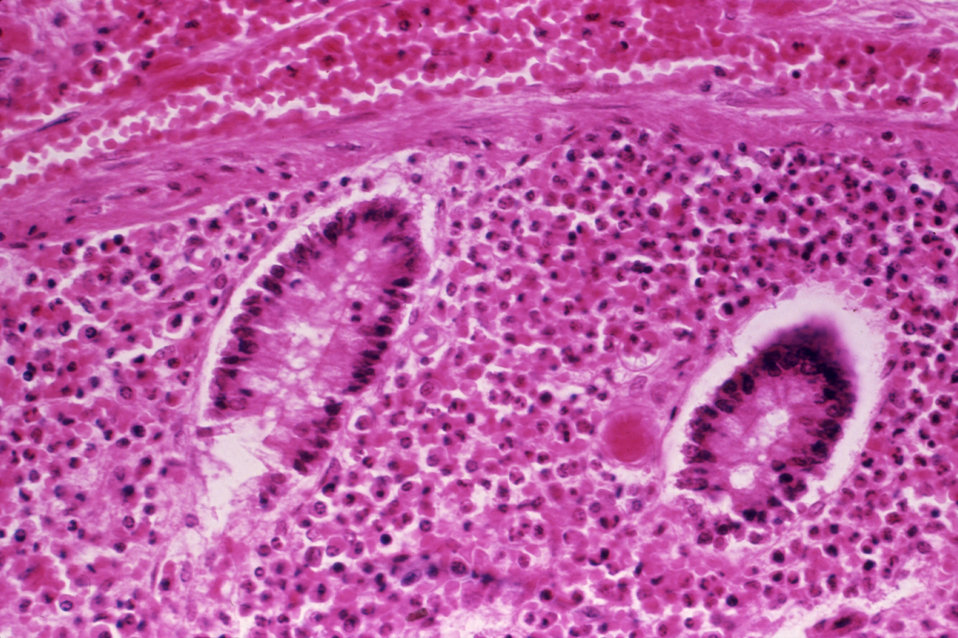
This micrograph reveals submucosal hemorrhage in the small intestine, in a case of fatal human anthrax; H&E stain; Mg. 240X.